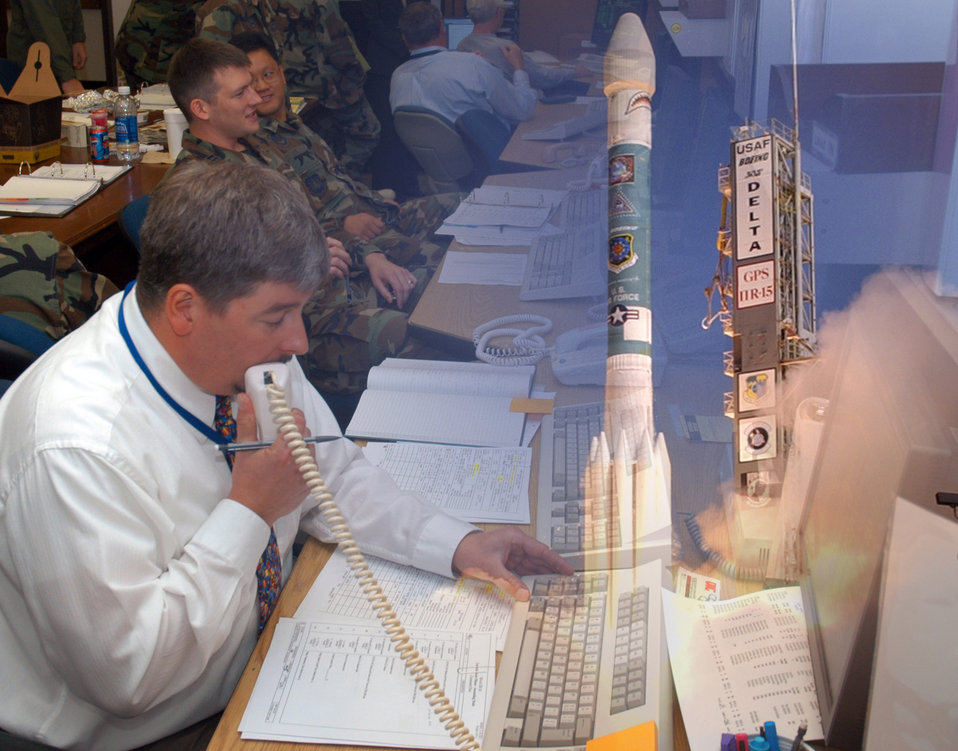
1st SOPS takes over 2nd GPS IIR-M satellite

Matt Wentz coordinates countdown checklists inside the 1st Space Operations Squadron's operations floor Sept. 25 as seconds tick away toward the launch of Global Positioning System IIR-M 15 from Cape Canaveral Air Force Station, Fla. GPS IIR-M satellites offer a signal strength two to four times more powerful than their Block II predecessors. Mr. Wentz is a telemetry analyst with Lockheed Martin.